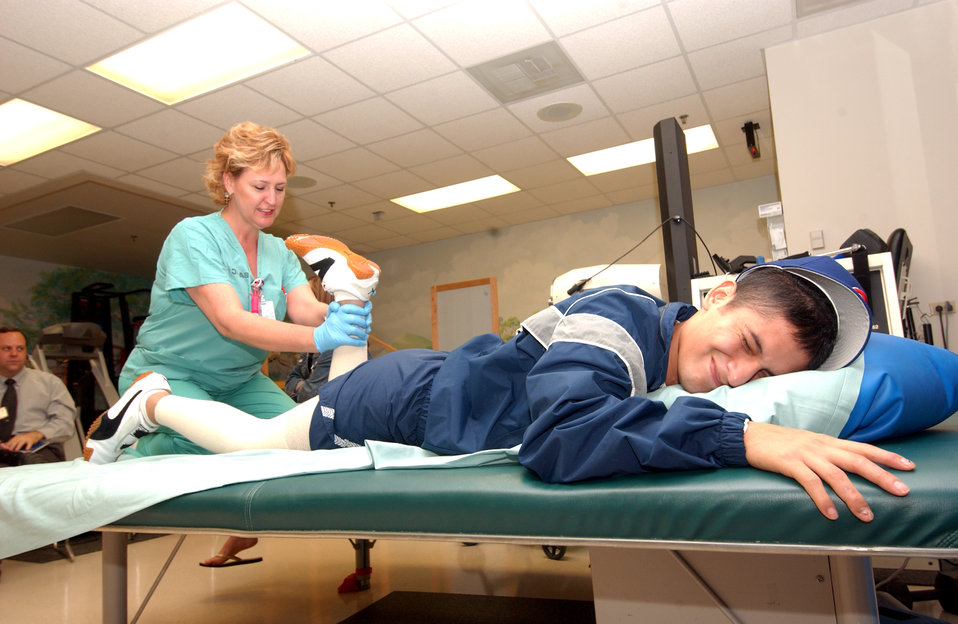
Airman wants to continue to serve

Senior Airman Dan Acosta winces when occupational therapist Stephanie Angle stretches his leg Thursday, Feb. 23, 2006, at the burn rehabilitation center at Brooke Army Medical Center in San Antonio.